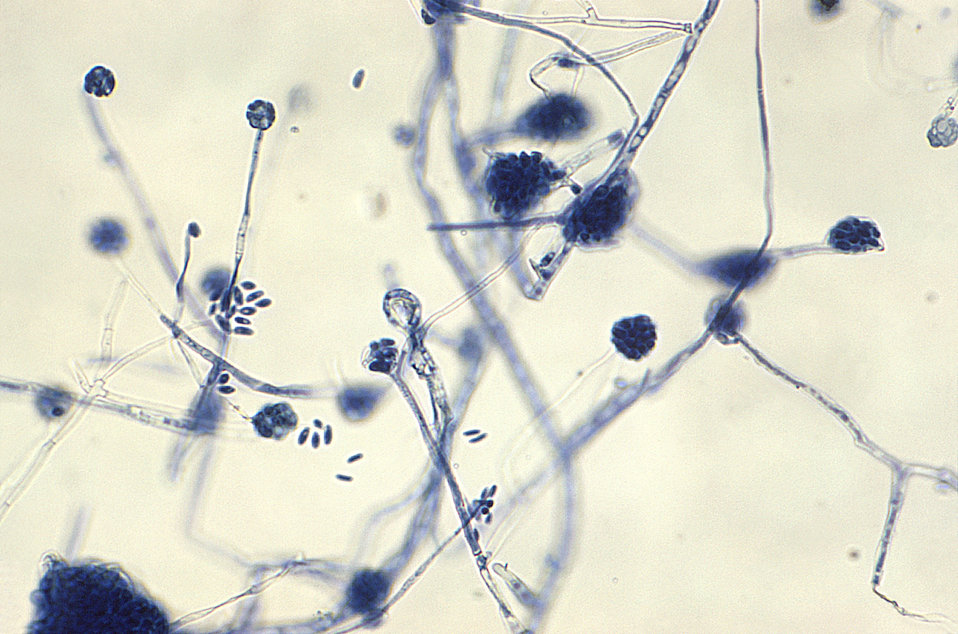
Magnified 1000X, this photomicrograph revealed some of the ultrastructural morphology exhibited by numbers of multiseptate, unbranched conidiophores of the fungal organism, Acremonium falciforme, each topped by a cluster of curved conidia.